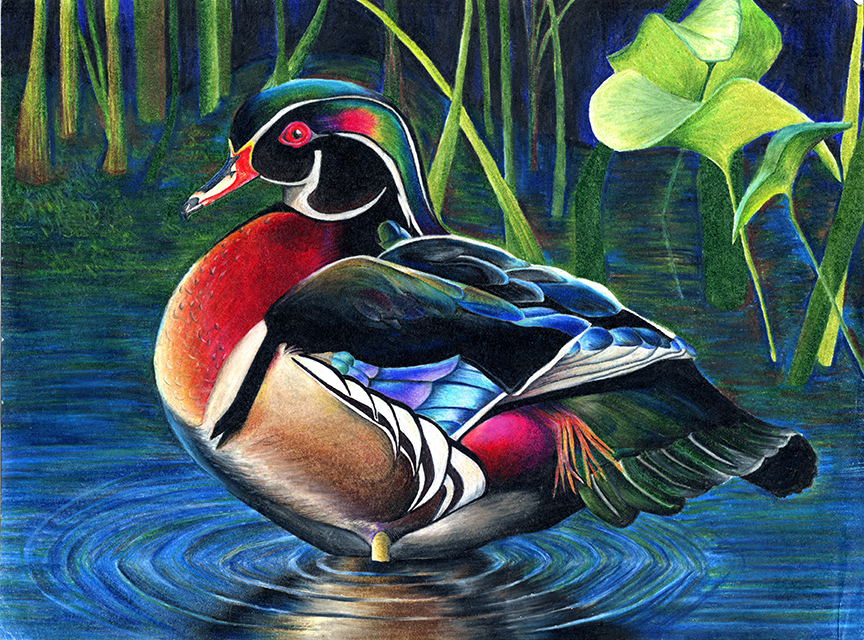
JRDuck2013ME

2013 Junior Duck Stamp Best of Show-Maine